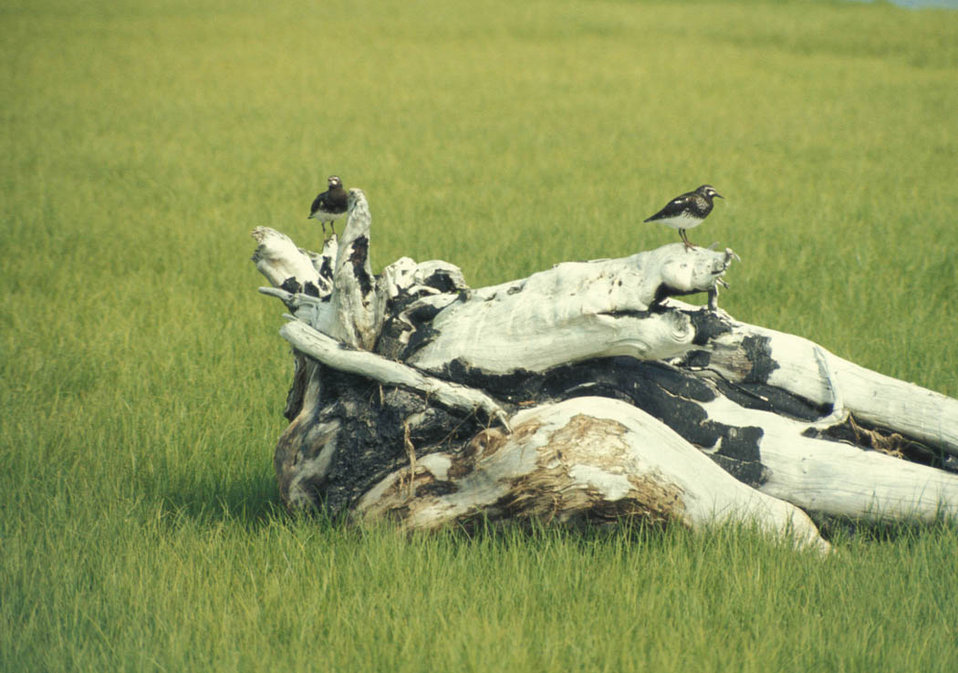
Black turnstones on driftwood

Two turnstones on a piece of driftwood